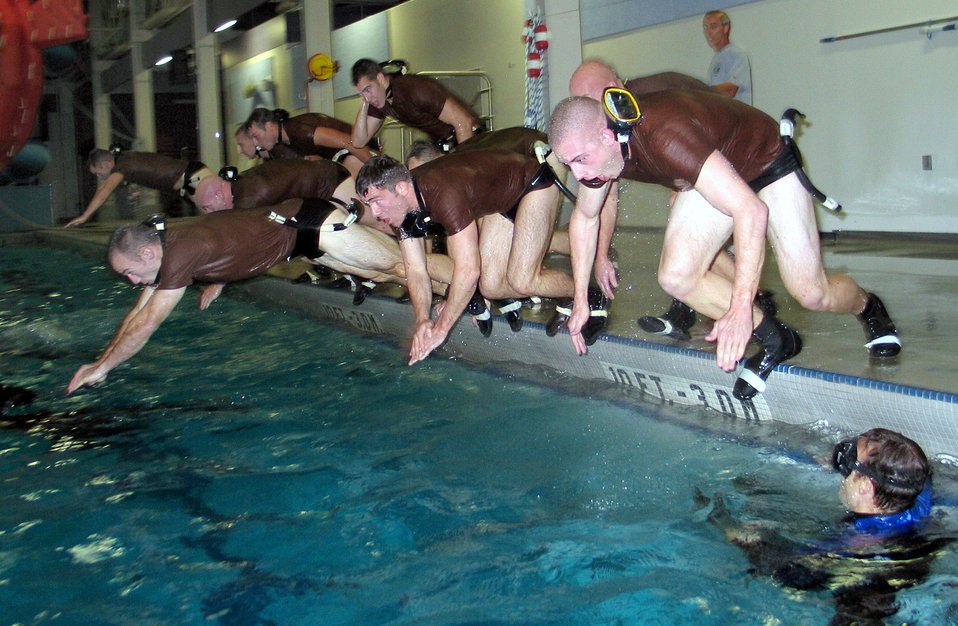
Combat rescue officers ready for field

Combat rescue officer selection program candidates perform pool exercises Oct. 24 at Fairchild Air Force Base, Wash., during the water confidence portion of the program. The most recent class started with 19 candidates, and ended with eight ready for the field as combat rescue officers.